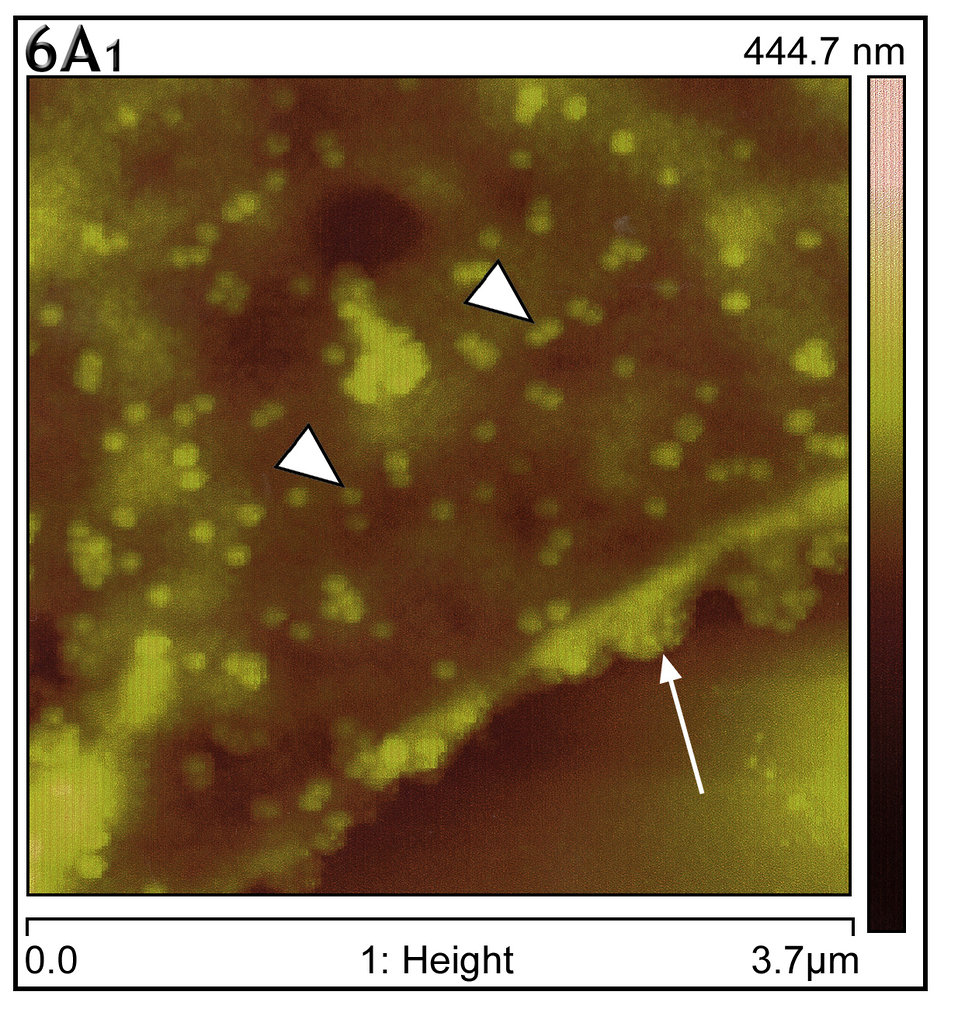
This atomic force micrograph of SARS infected Vero E6 culture cells revealed a thickened plasma membrane.